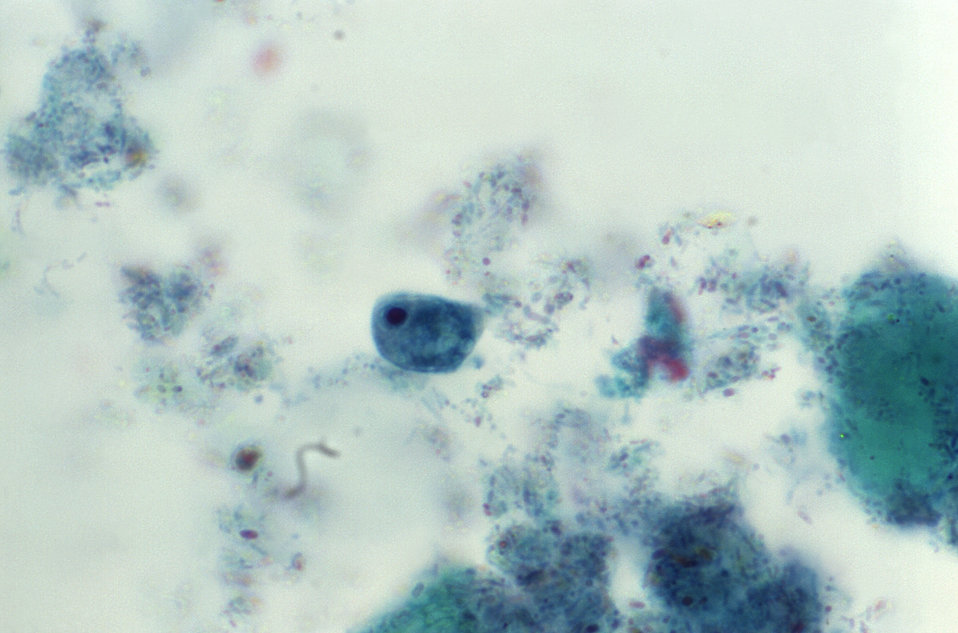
This trichrome-stained photomicrograph revealed the presence of a parasitic Iodamoeba b�ii trophozoite containing a number of achromatic granules within its cytoplasm.